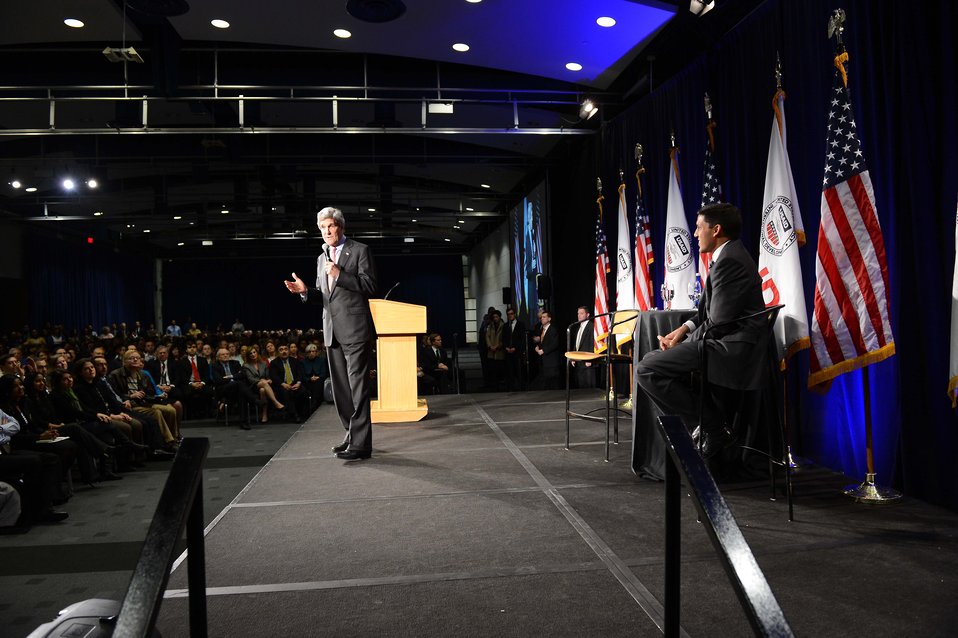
Secretary Kerry Delivers Remarks to USAID Employees

U.S. Secretary of State John Kerry delivers remarks to employees of U.S. Agency for International Development (USAID) employees at the Ronald Reagan Building in Washington, D.C., February 15, 2013. USAID Administrator Rajiv Shah is also pictured.